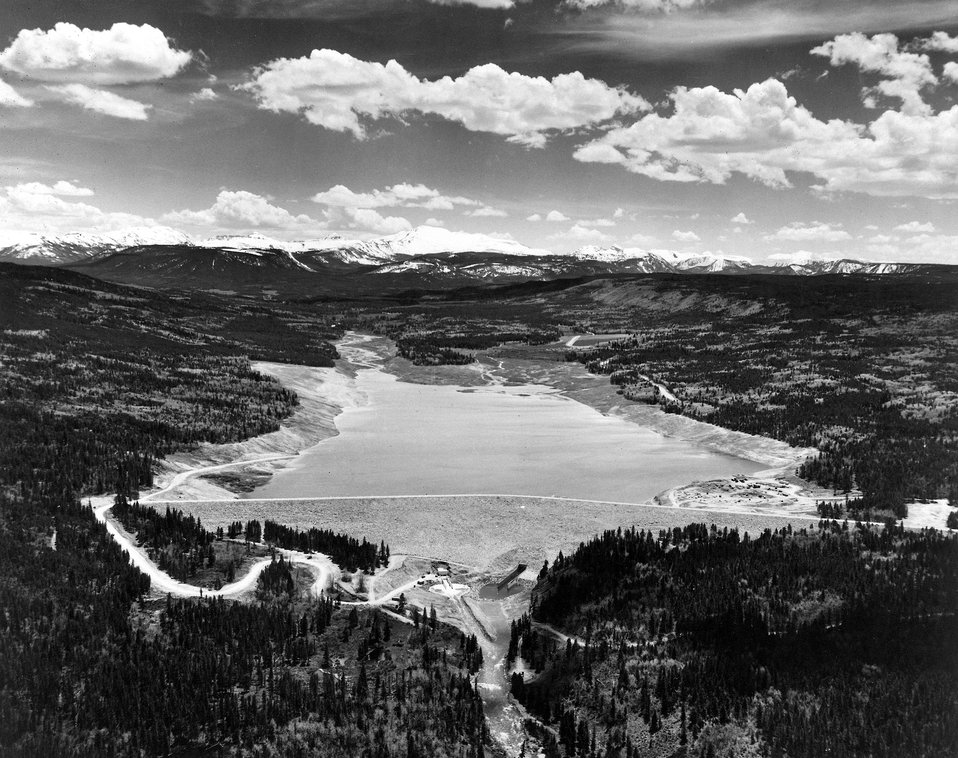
Aerial view of Meeks Cabin Dam and Reservoir. The beautiful snow capped Uinta Mountains are in the background. c. 1980